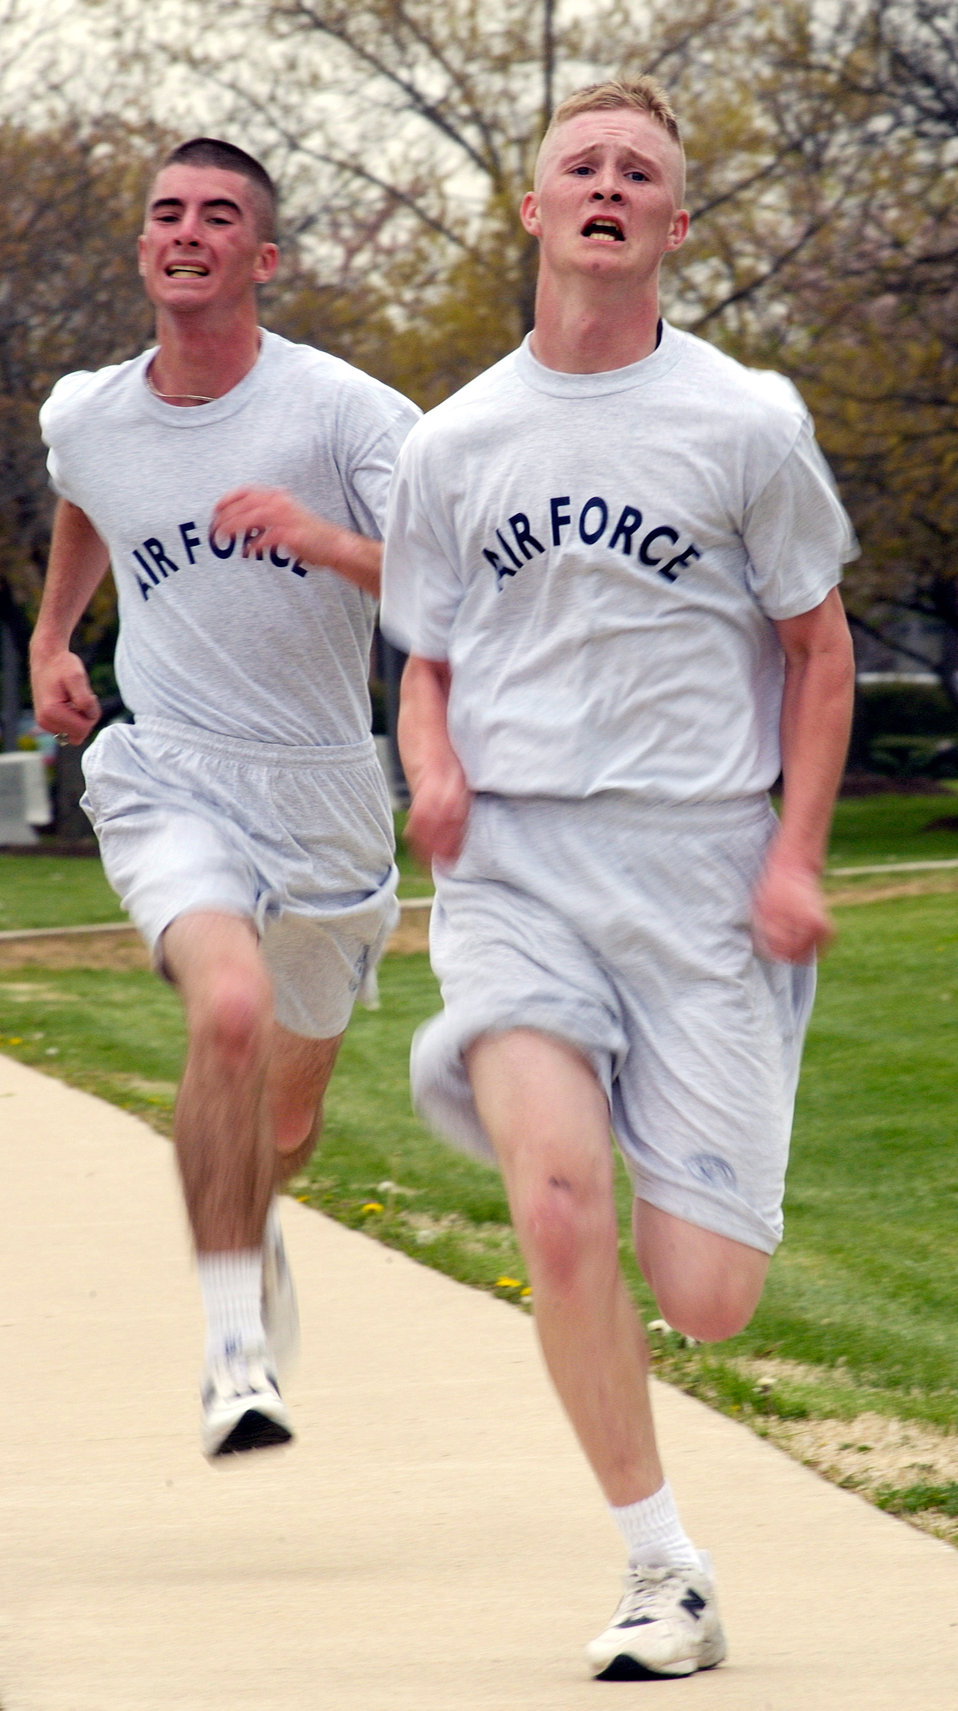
The fleet of foot

BOLLING AIR FORCE BASE, D.C. -- Trainees at the U.S. Air Force Honor Guard technical school here participate in a physical-fitness routine several times a week. Their routine, which includes push-ups, crunches and a 1.5-mile run, mirrors the proposed Air Force fitness standards, which will be implemented in January 2004.